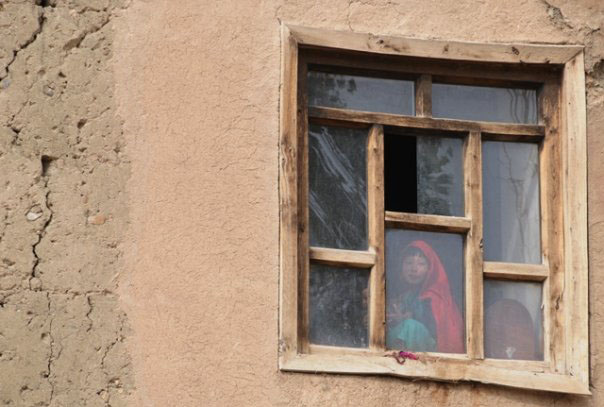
Haunting observance

An Afghan girl smiles behind a window in Ghazni province, Afghanistan in 20009. Then-Tech. Sgt. Rebecca Corey was documenting the work of the provincial reconstruction team in the region, when she photographed the child standing in the window observing her team.